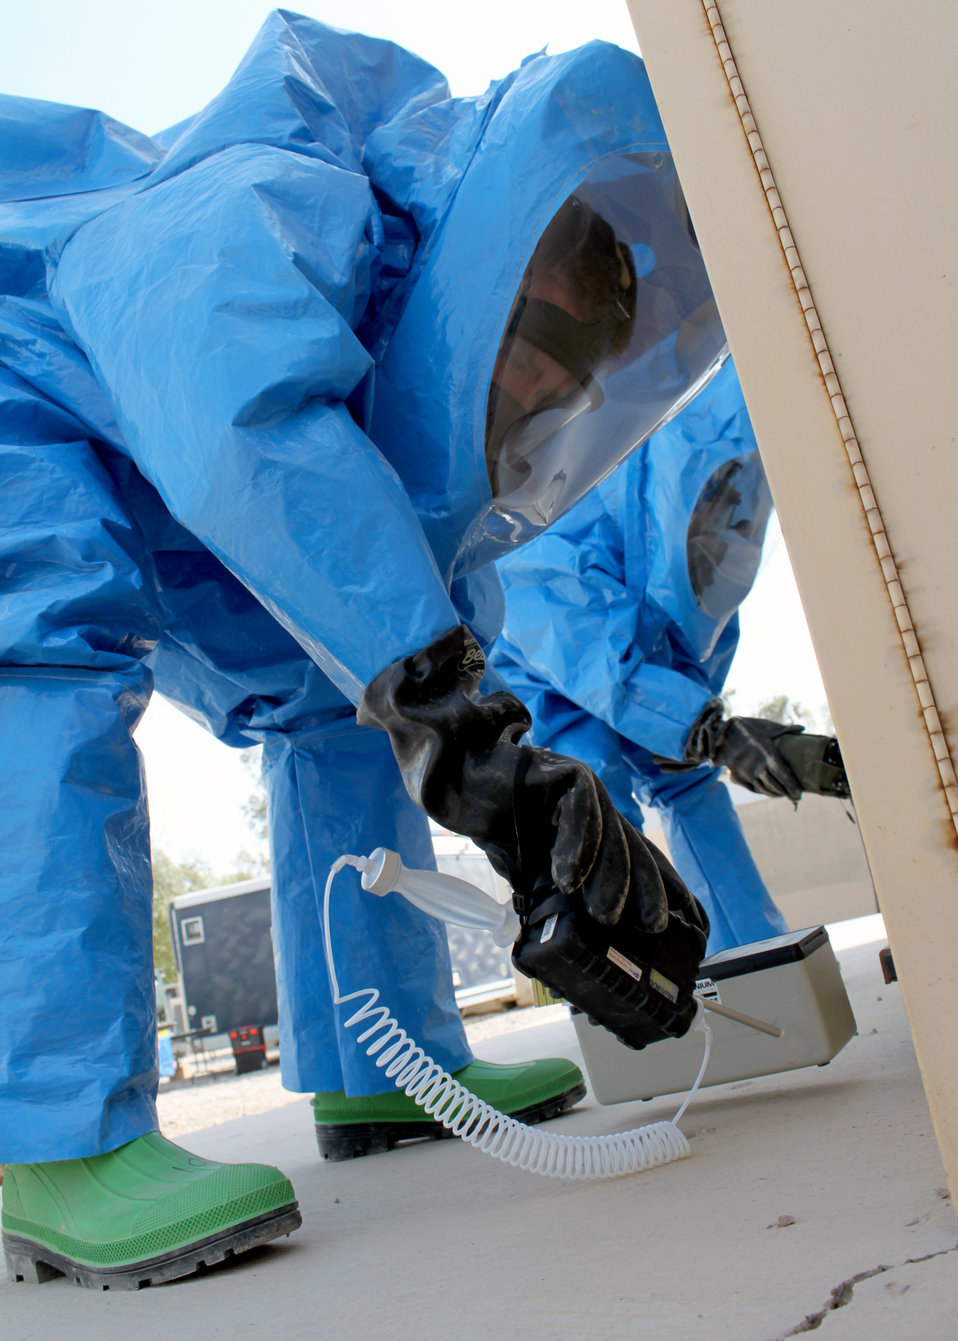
Emergency management

Senior Airmen Nathan Krajcirik (left) and Nadege James conduct training using a variety of equipment Aug. 3, 2010, at Joint Base Balad, Iraq. The Airmen of the Emergency management section test for chemicals, biological agents or nuclear materials in any form. Airmen Krajcirik and James are 332nd Civil Engineer Squadron Emergency Management Section technicians.